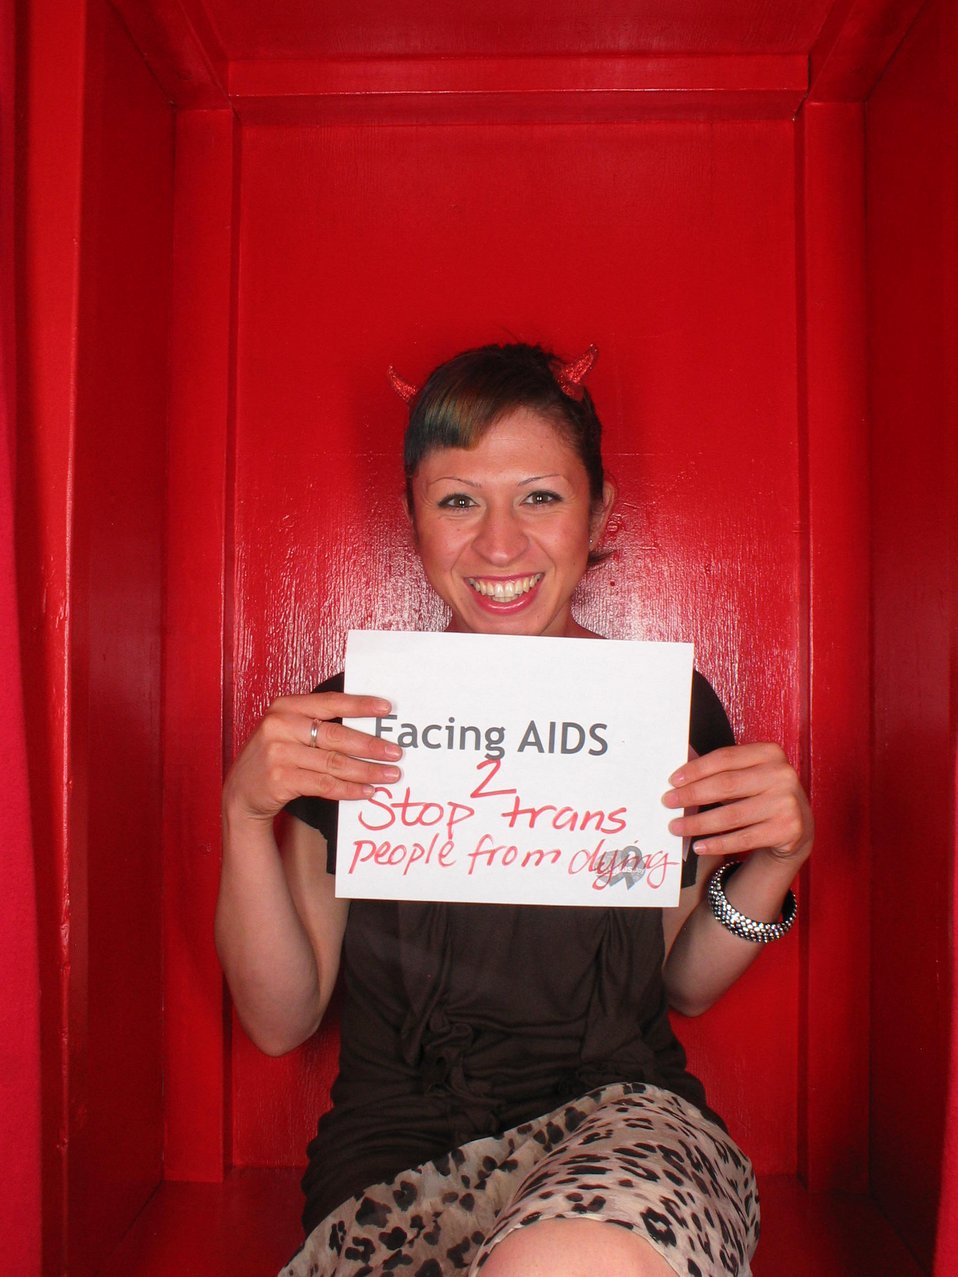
Facing AIDS 2 stop people from dying.